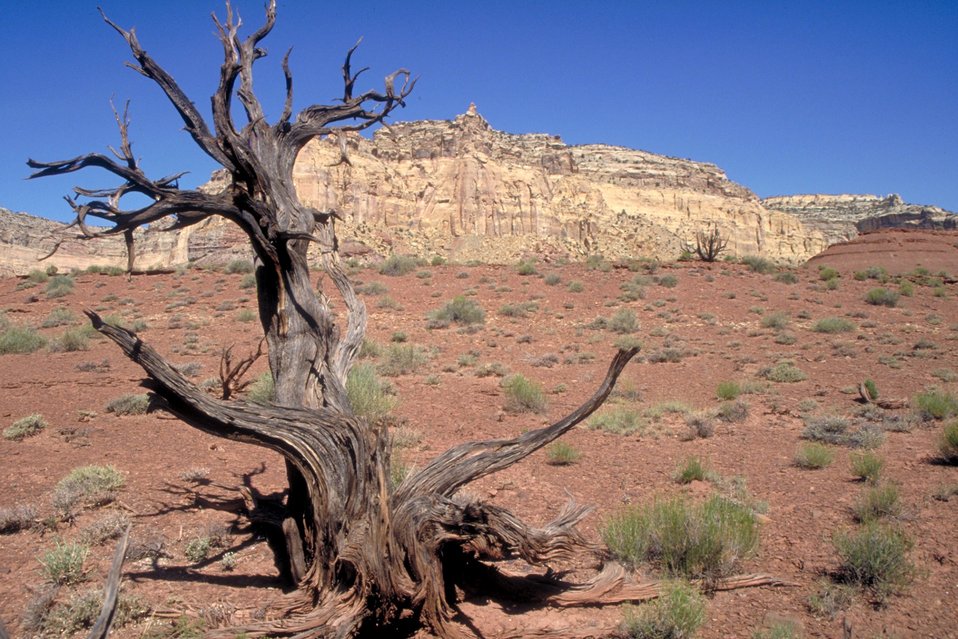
Red Canyon Loop, San Rafael Swell.